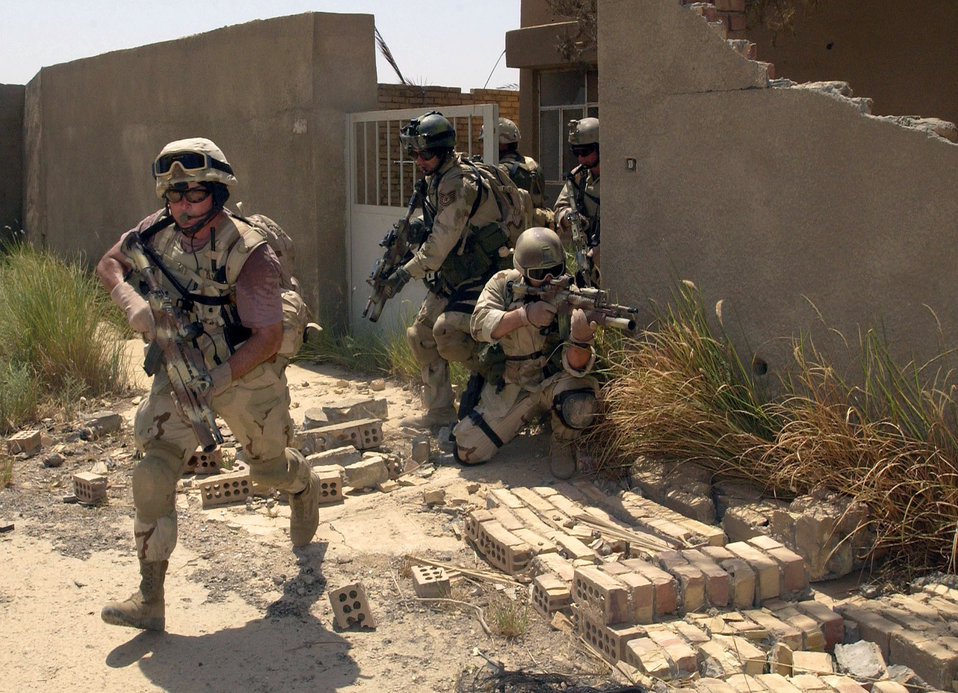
Cover me

OPERATION IRAQI FREEDOM -- Chief Master Sgt. Ian Nesbit, a pararescueman assigned to the Oregon Air National Guard, rushes a danger area during an urban streets movement exercise.